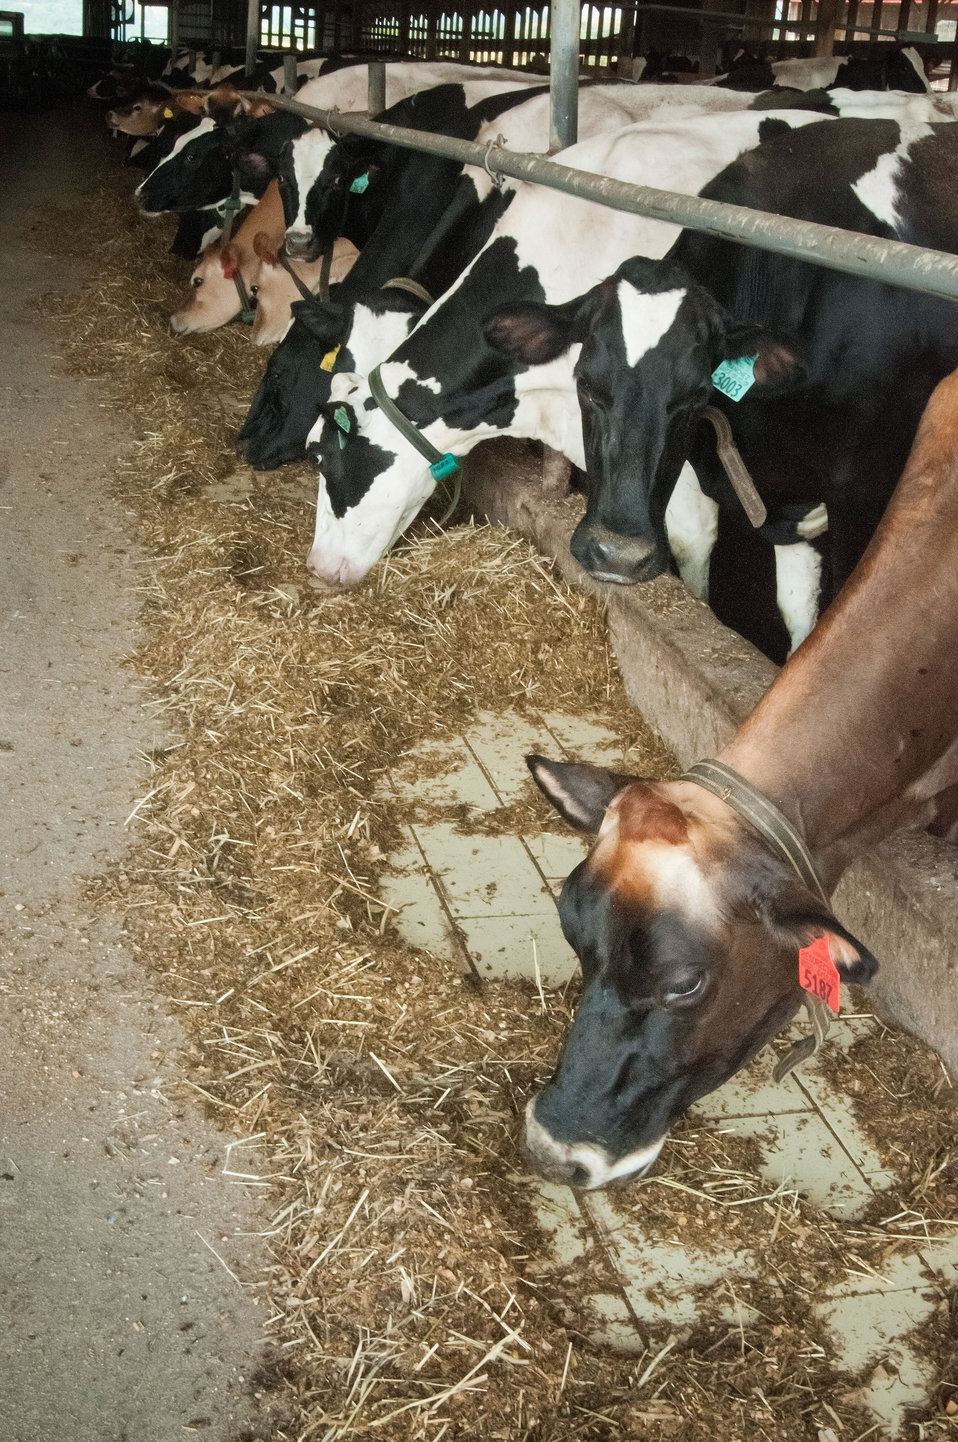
Holstein dairy cattle at Pennwood Dairy Farms owned and operated by the Stoltzfus family in Berlin, PA. The cattle produce the source material, manure, for the anaerobic digester the dairy uses to produce energy for the dairy. The digester produces one million kilowatt hours; half of the energy needs of the farm, the other five hundred thousand kilowatt hours are sold back to the grid. An anaerobic digester is a component of a waste management system that provides biological treatment in the absence of oxygen. The digester captures biogas for energy production, manages odors, reduces the net effect of greenhouse gas emissions, and reduces pathogens. The anaerobic digester practice is part of a planned conservation management system that manages manure and/or comprehensive nutrient management system. Agriculture Secretary Tom Vilsack visited the dairy on Tuesday, July 17, 2012. During his visit Secretary Vilsack highlighted the U.S. Department of Agriculture’s (USDA) energy efficiency programs and announced a new effort to help rural consumers make affordable, energy-efficient improvements to their homes and businesses.